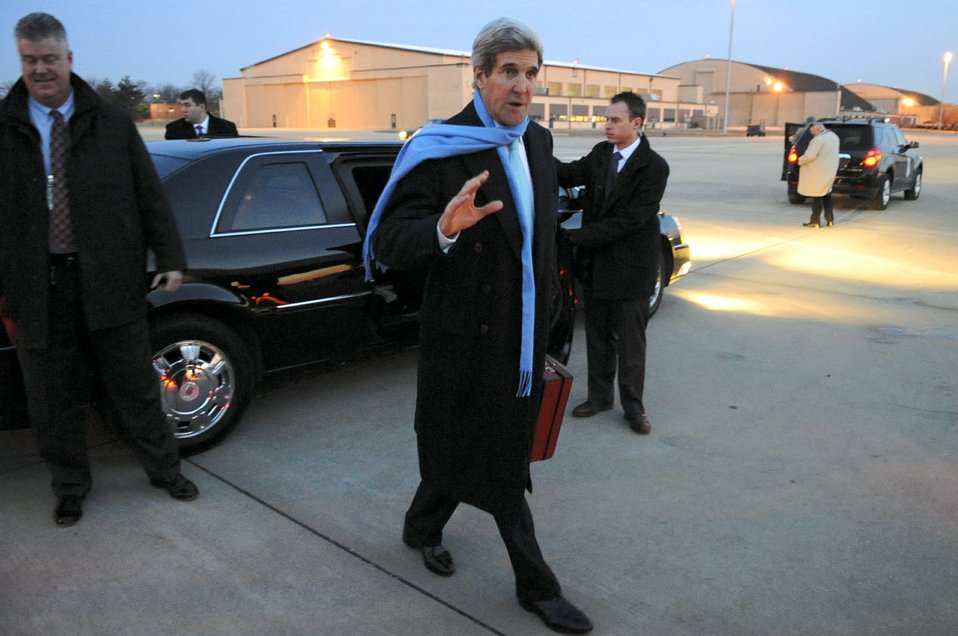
Secretary Kerry Arrives for Trip to Asia, Persian Gulf

U.S. Secretary of State John Kerry waves to the Air Force crew greeting him as he arrived at Andrews Air Force Base to begin a trip to Asia and the Persian Gulf on on February 12, 2014.